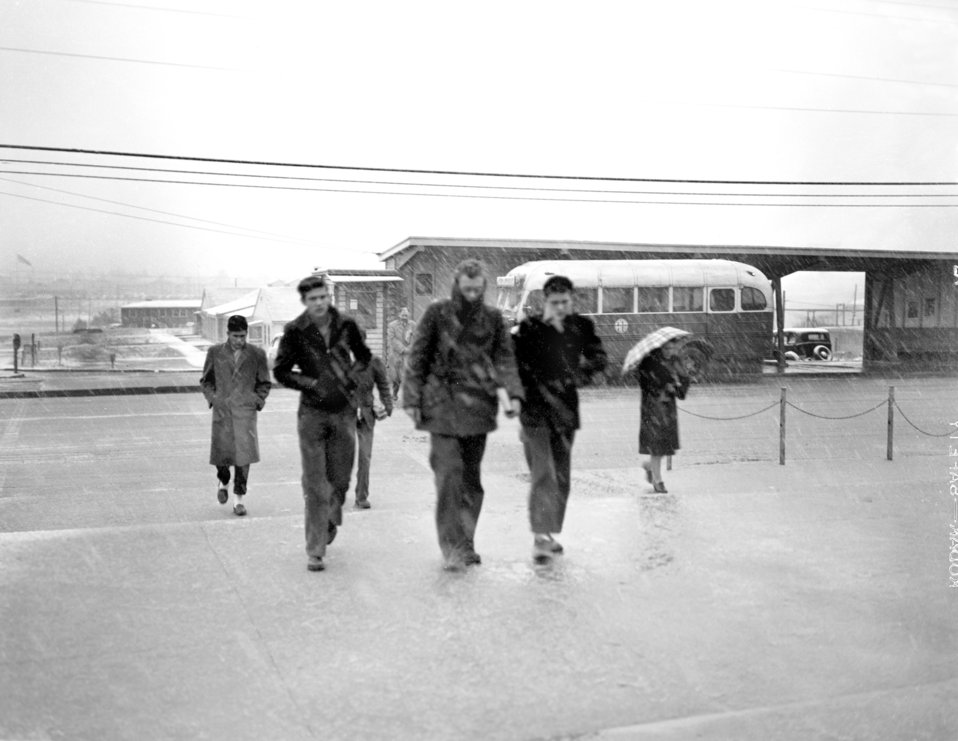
Wet Snow Jackson Square 1947

3305-5 DOE photo Ed Westcott 2-20-1947 Oak Ridge Tennessee